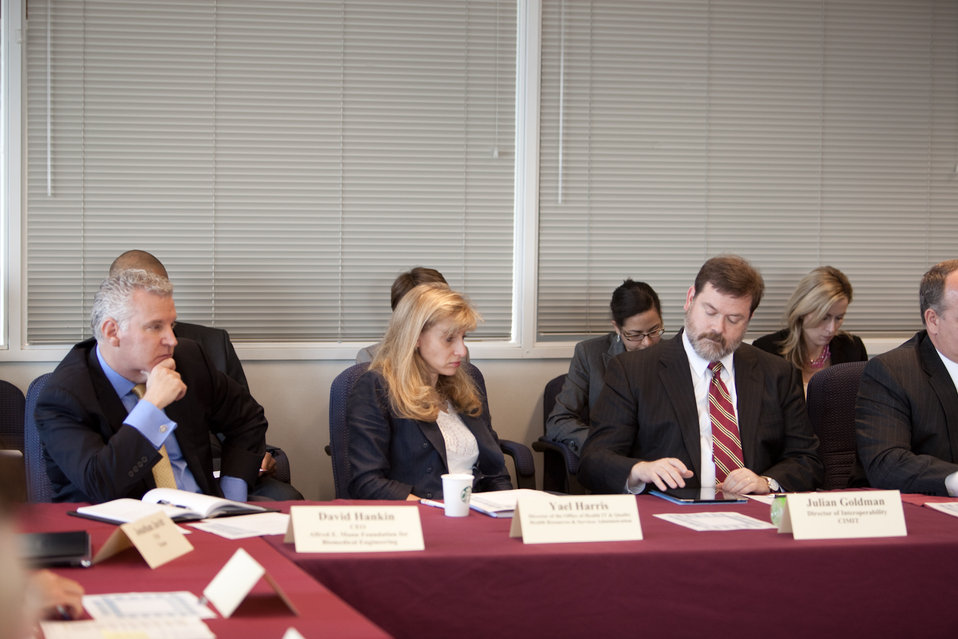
mHealth Attendees at FCC's Headquarters

Members from the health industry attendees David Hankin of Alfred Mann, Yael Harris (Director of the Office of Health IT & Quality) of HRSA and Julian Goldman (Director of Interoperability) of CIMIT.

June 6, 2012 - FCC Headquaters | Washington, DC